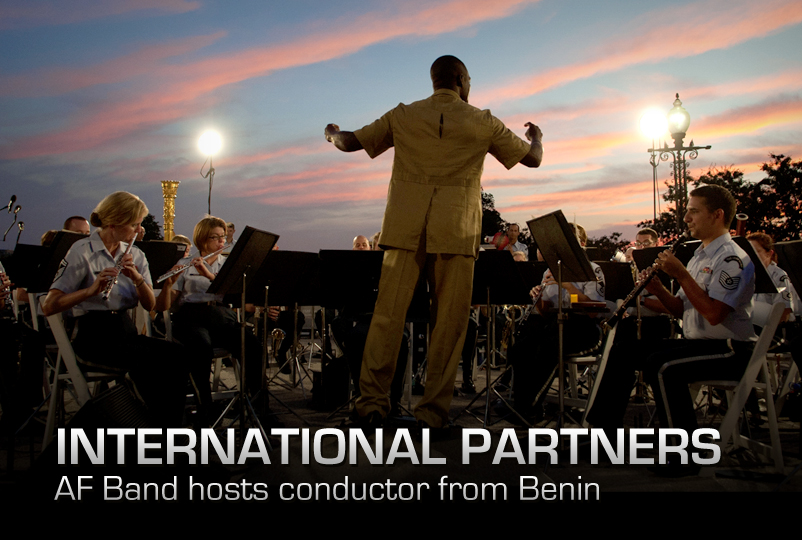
International Partners